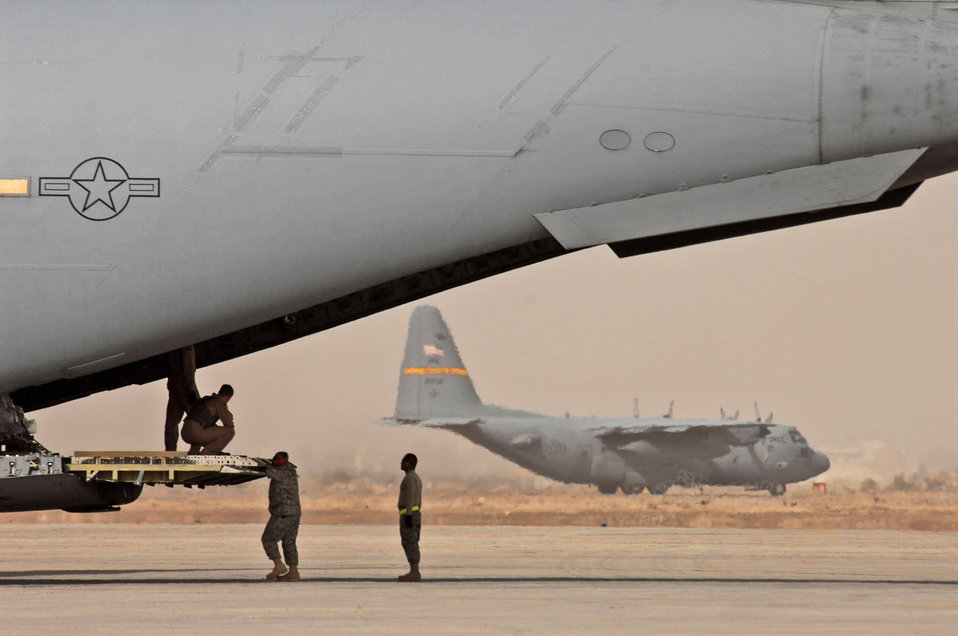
A very busy hub

Airmen wait for a pallet of equipment to be loaded on a C-17 Globemaster III Jan. 30 at Sather Air Base, Iraq. The largest number of passengers and the second largest amount of cargo in Iraq moves through Sather AB.